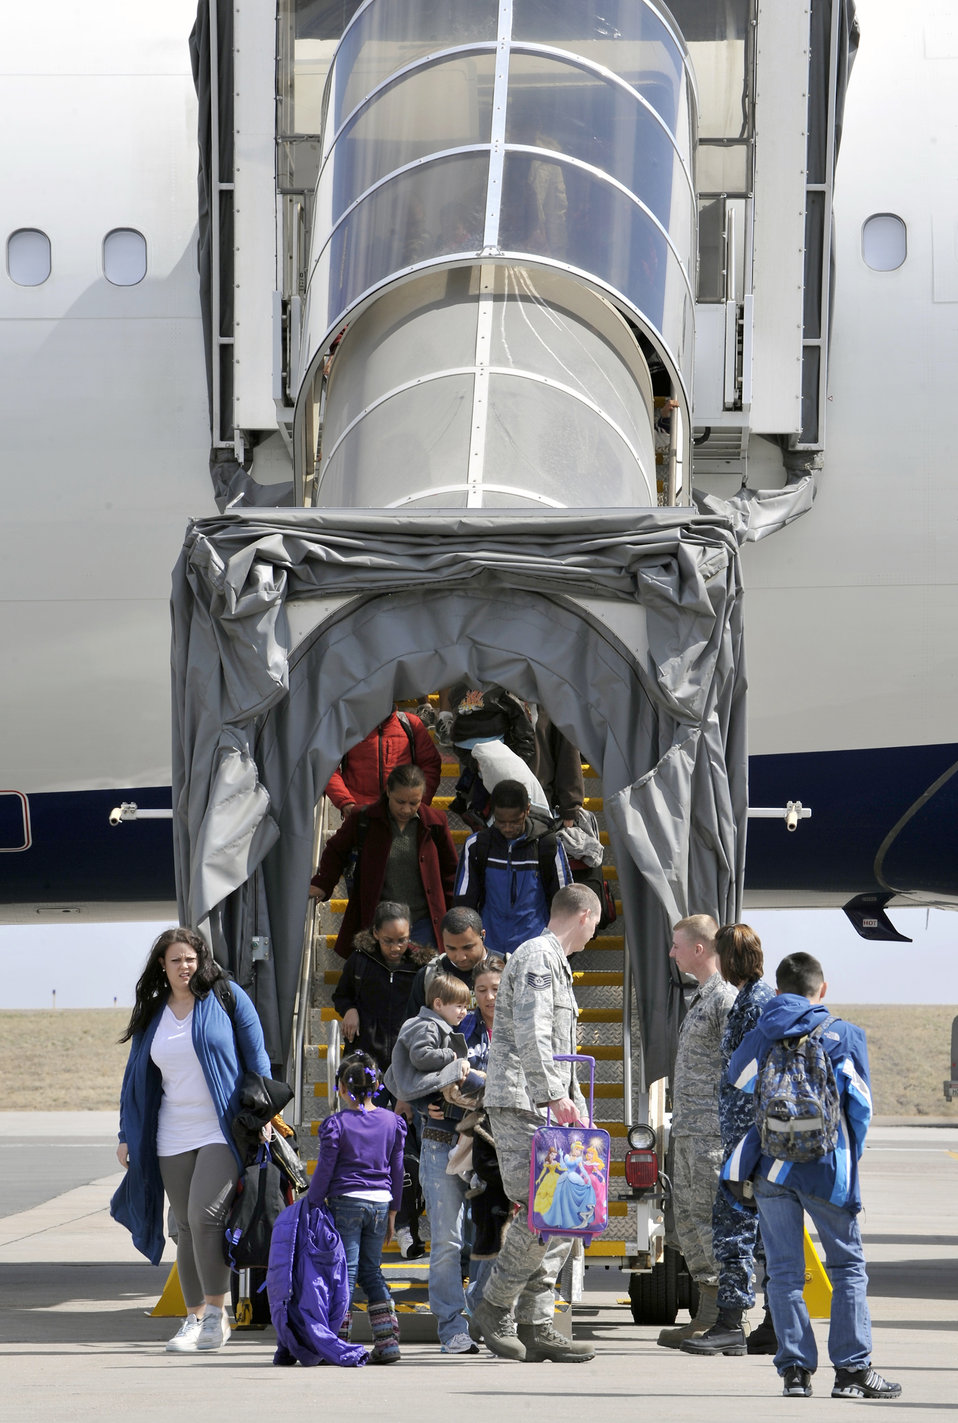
Military family members arrive

Service members assist military family members arriving from Japan, as they exit an aircraft March 24, 2011, at Denver International Airport, Colo. Family members voluntarily evacuated from Japan due to the recent natural disaster.